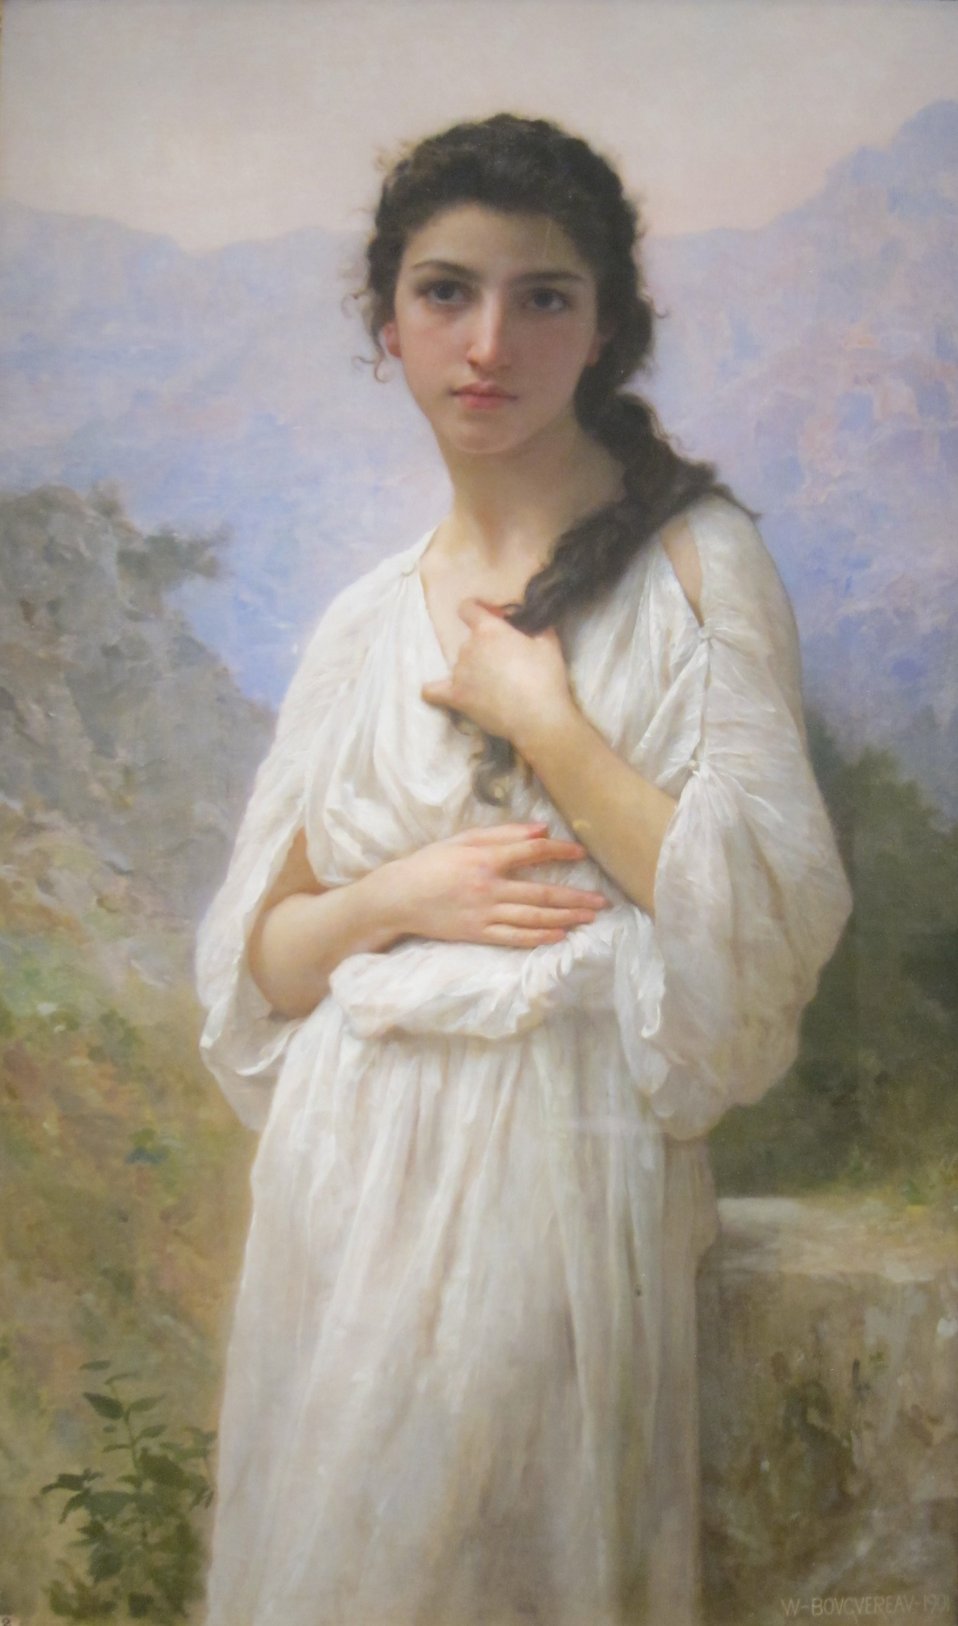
'Meditation' by Bouguereau, Cincinnati Art Museum